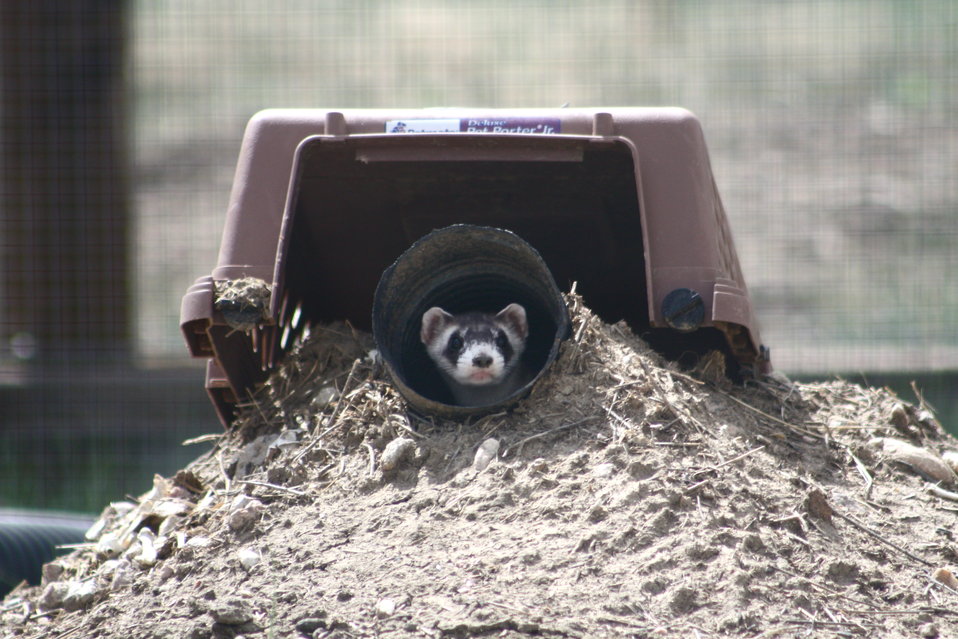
Interns visit the NBFFCC

In the summer of 2012, USFWS Region 6 interns visited the National Black-footed Ferret Conservation Center (NBFFCC) in Colorado to learn how the program reintroduces the endangered Black-footed ferret back into its native habitat.